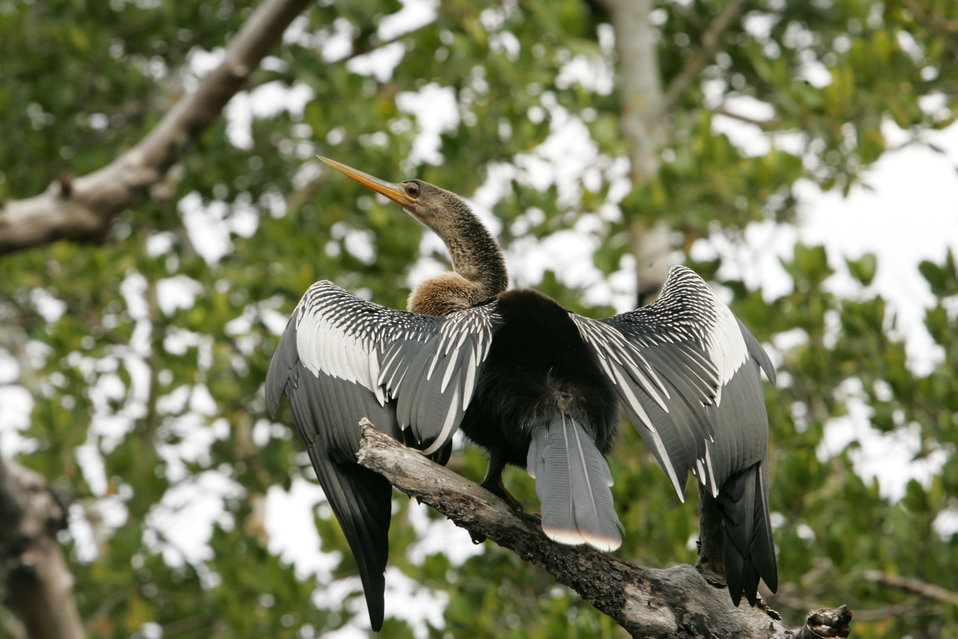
Anhinga, J.N. 'Ding' Darling NWR

Anhinga drying its wings.